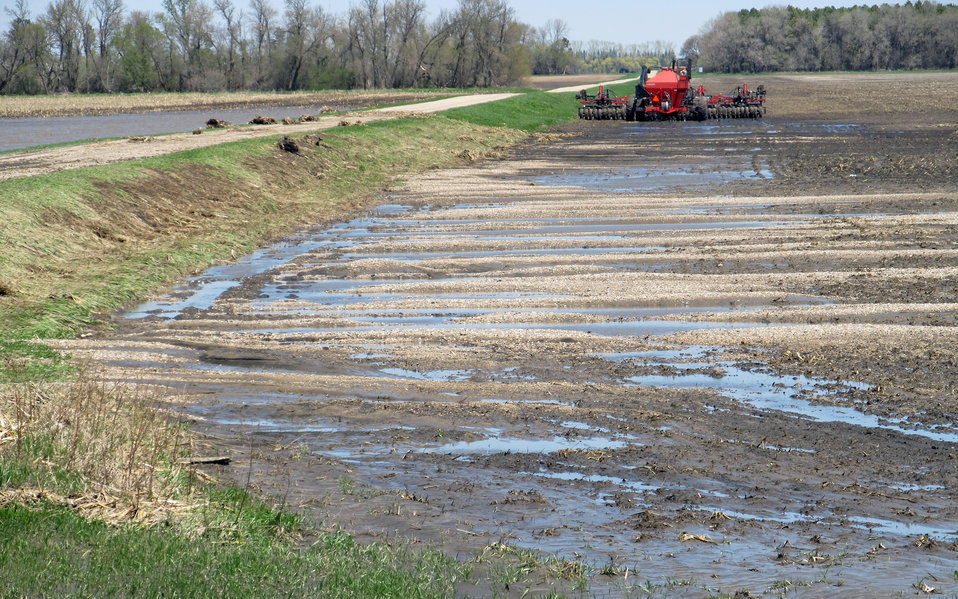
Flooding and water damage in the Park and Tongue River Watersheds located in Cavalier, Pembina and Cavalaier Counties in ND on Thursday, May 23, 2013.